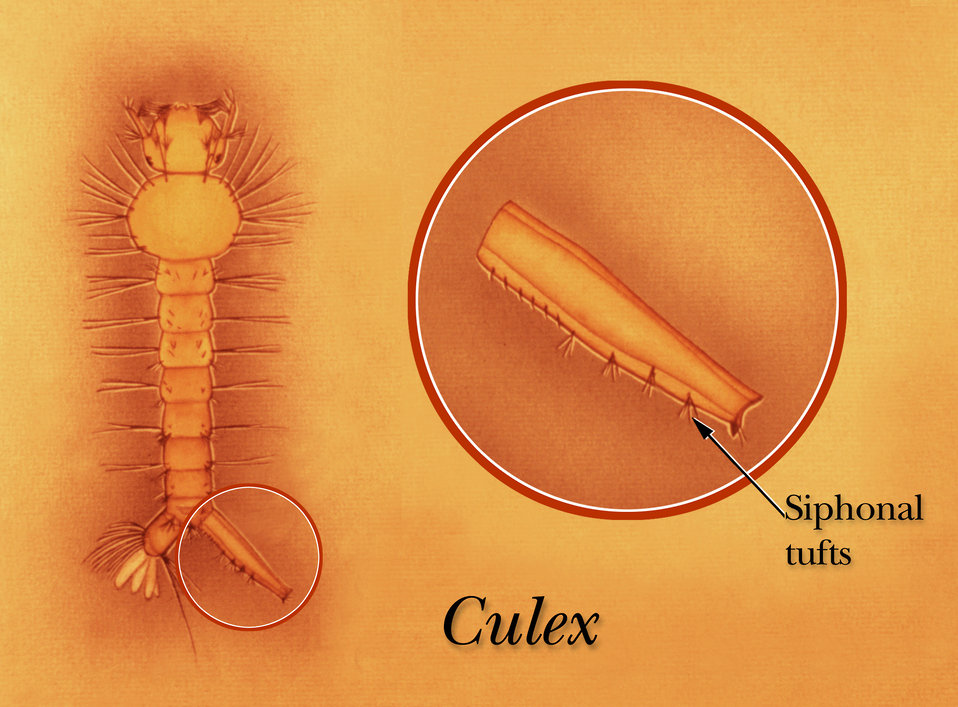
An illustration identifying the row, or scattered siphonal tufts of a Culex mosquito larva.